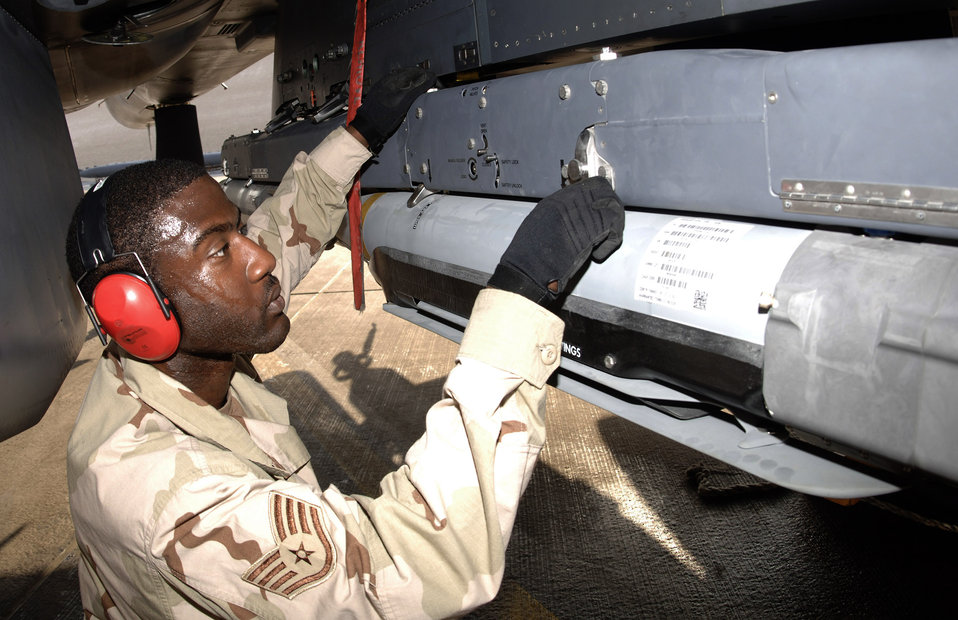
Weapon secured

Staff Sgt. Kevin Harvey secures a weapons carriage with GBU-39/B small diameter bombs to an F-15E Strike Eagle. Sergeant Harvey is assigned to the 379th Expeditionary Aircraft Maintenance Squadron.